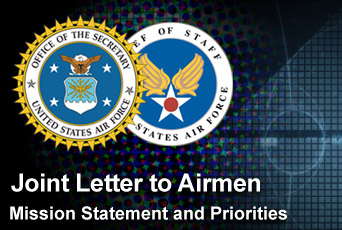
AF leaders issue joint mission message

In their first joint Letter to Airmen, the acting secretary of the Air Force and the Air Force chief of staff focus on the Air Force mission to fly, fight and win in air, space and cyberspace.